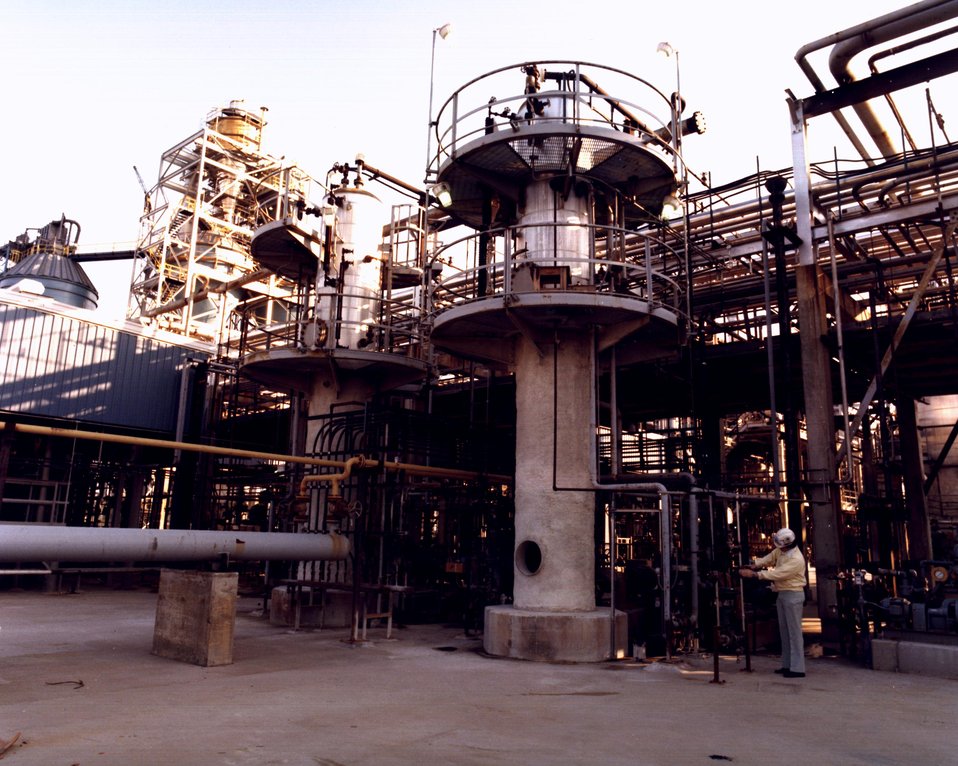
CONSTRUCTION PROGRESS AT THE H-COAL 600-TONS-PER-DAY PILOT PLANT.